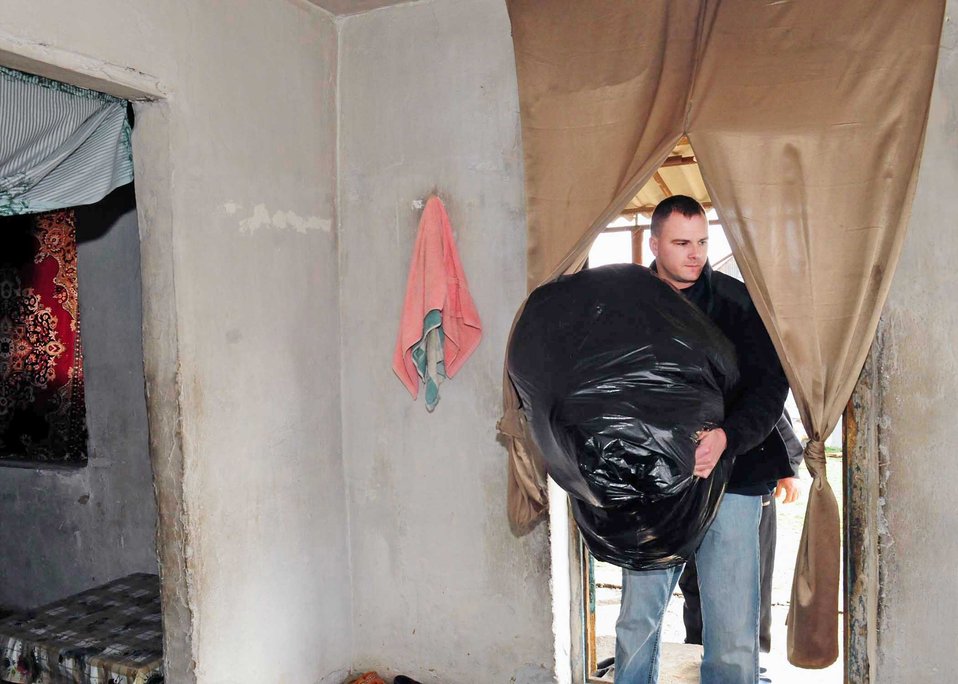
Manas Airmen deliver care packages to Kyrgyz villagers

Tech. Sgt. Jake Mayo brings humanitarian assistance items collected from stateside bases and friends into the home of a family March 18, 2010, in Manas Village, Kyrgyzstan. Sergeant Mayo is the 376th Expeditionary Logistics Readiness Squadron vehicle maintenance NCO in charge deployed from the Air National Guard in Birmingham, Ala.